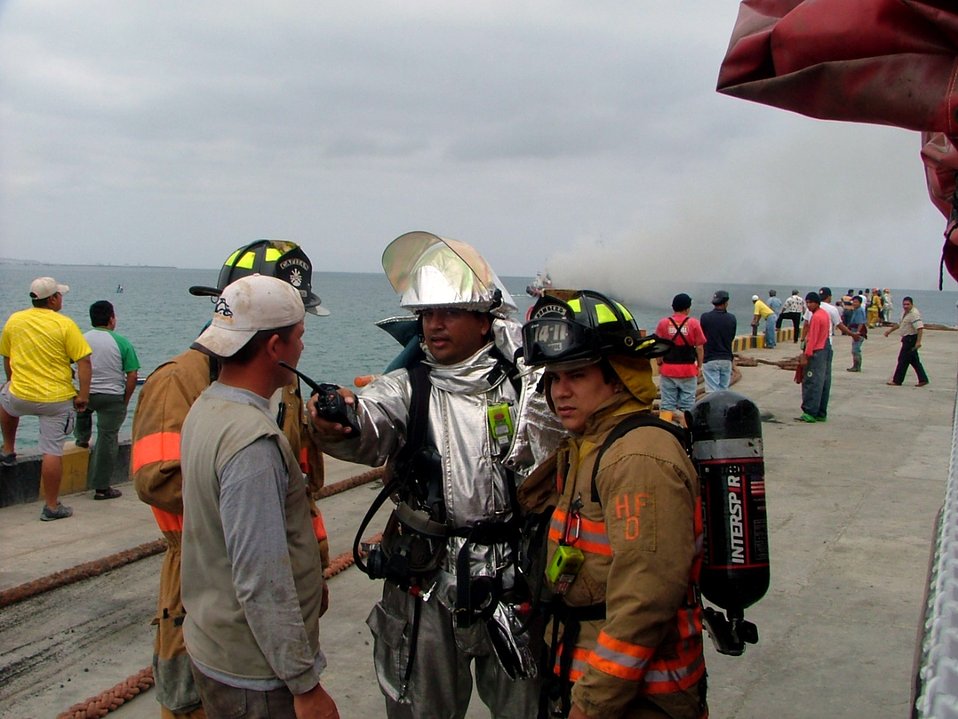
FOL Manta firefighters assist local firefighters

Firefighter Fabrizio Recalde (in silver) talks with members of the local Manta, Ecuador, fire department Sept. 26 as they plan their strategy for putting out a fire on a local fishing boat. Forward Operating Location Manta firefighters assisted the local authorities in putting out the fire.